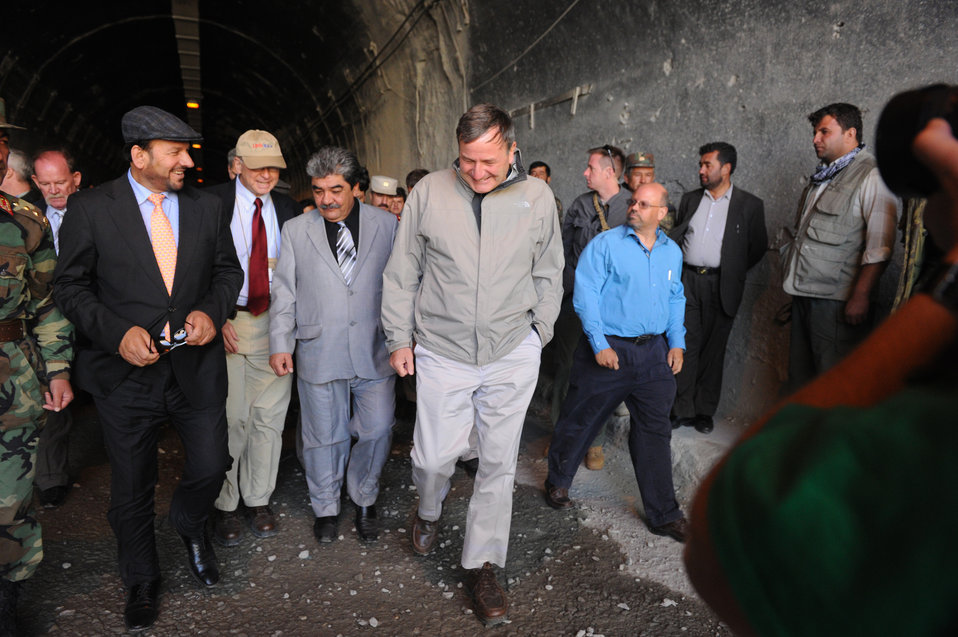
U.S. Ambassador Karl W. Eikenberry attends a ceremony to mark the beginning of renovations at the Salang Tunnel on the border of Parwan and Baghlan Provinces, Afghanistan, on Wednesday, June 15, 2011. (S.K.Vemmer/Department of State)